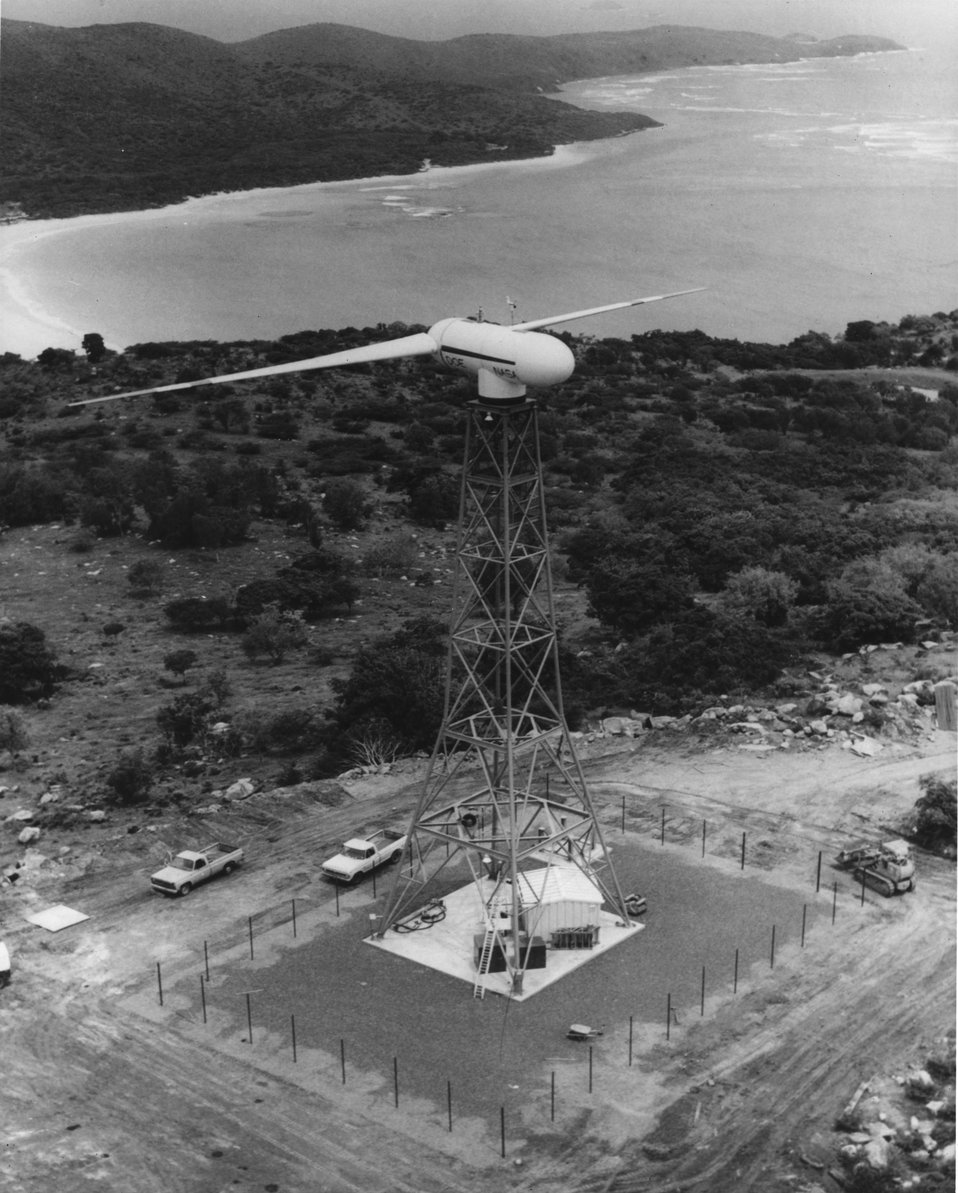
A large modern wind turbine generator is being field tested on Culebera Island, Puerto Rico for the Department of Energy and the National Aeronautics and Space Administration. c. 1978